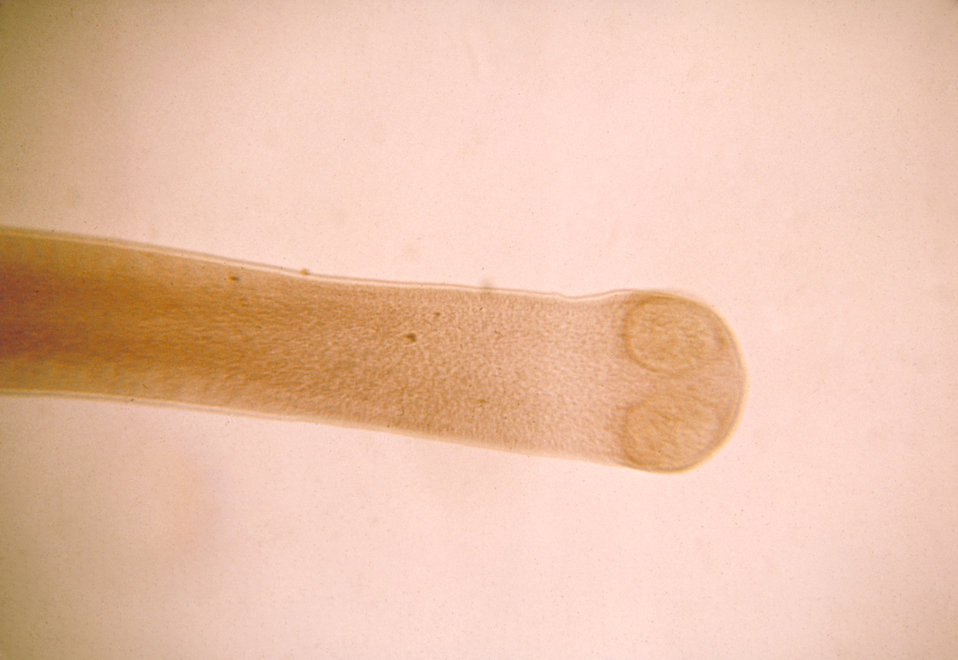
Hymenolepis diminuta scolex. Parasite.